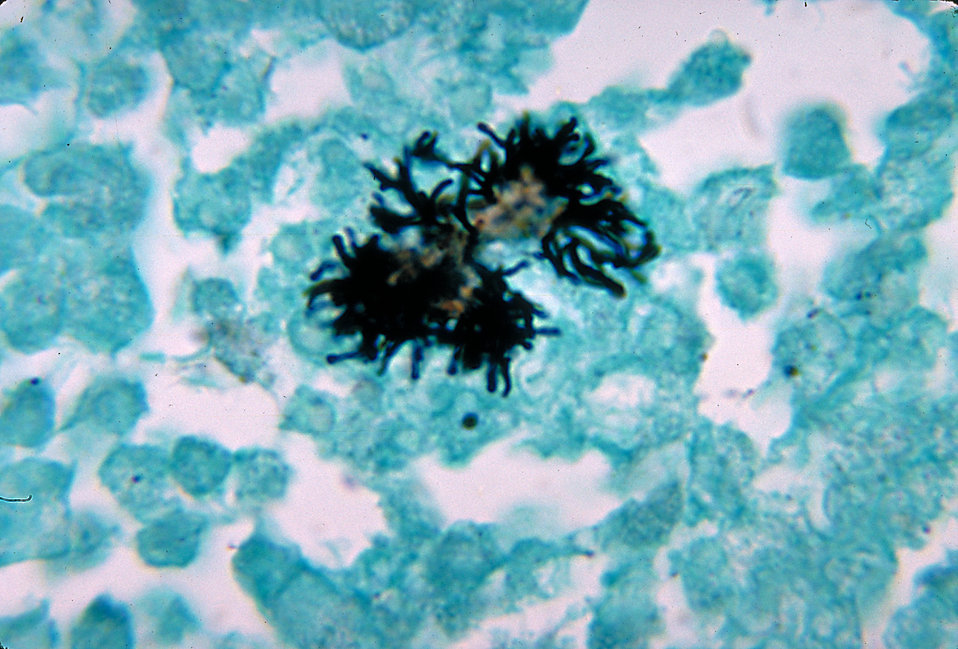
This methylamine silver stained brain abscess tissue sample shows histopathologic changes due to A. naeslundii bacteria.